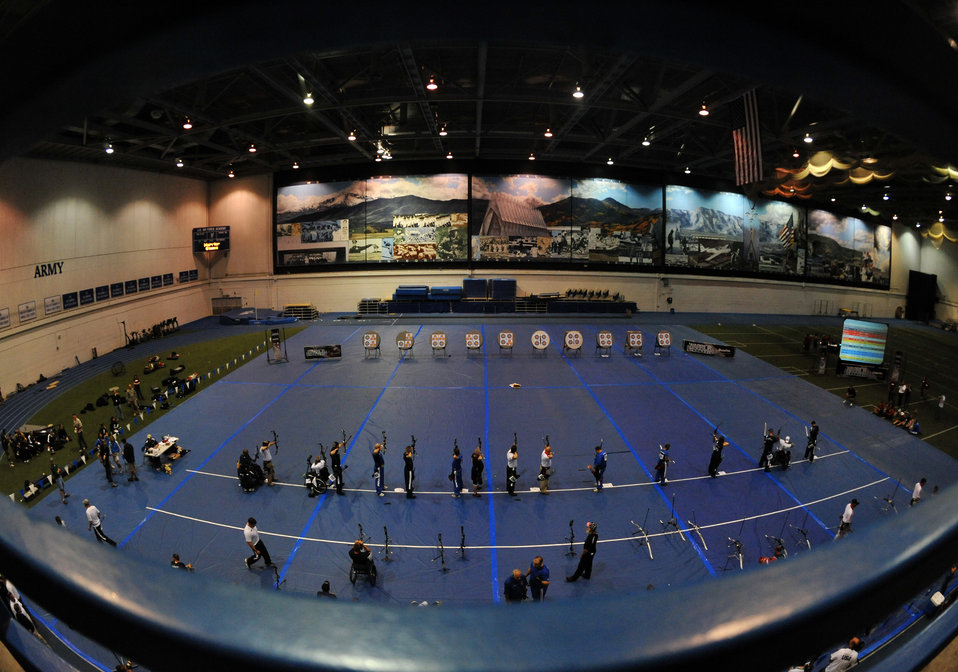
Warrior Games

Athletes shoot their bows at targets during the archery competition of the 2012 Warrior Games at the U.S. Air Force Academy in Colorado Springs, Colo., May 2, 2012.